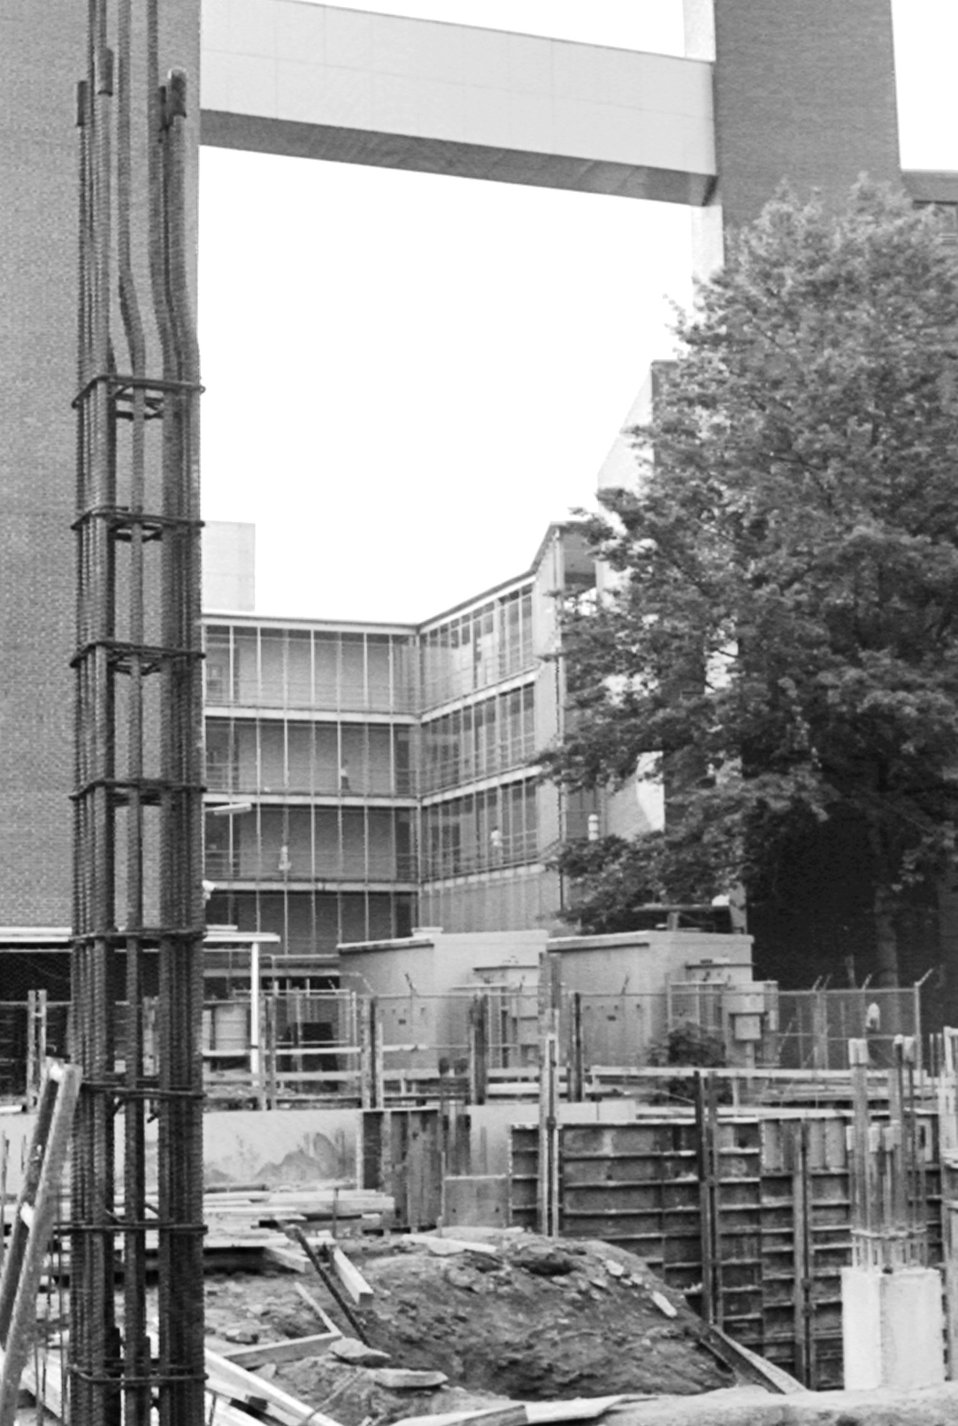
A photograph taken during construction of the CDC maximum containment virology building Atlanta, Georgia.